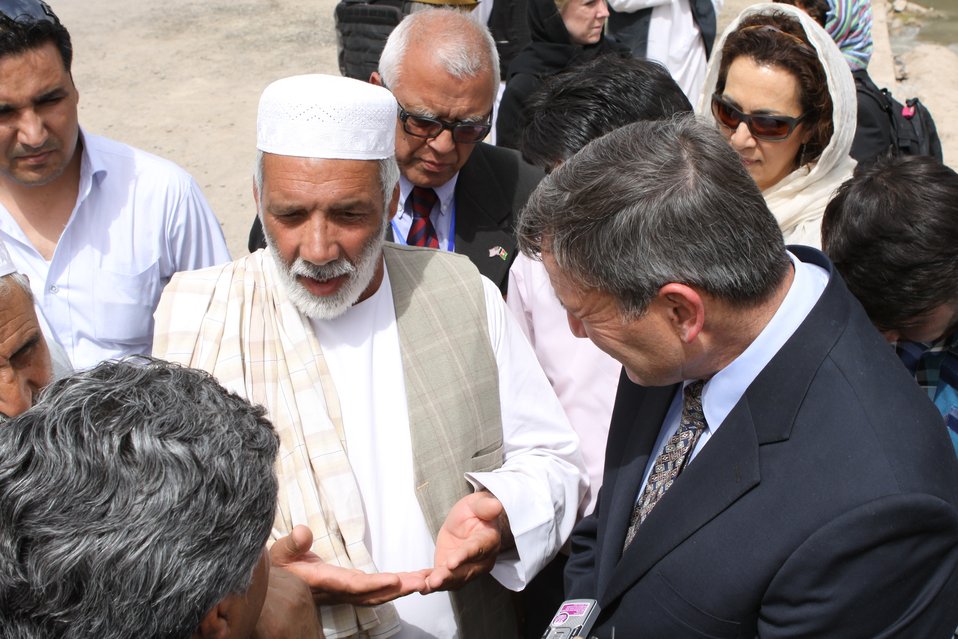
100525 Hirat Marble Conference 633